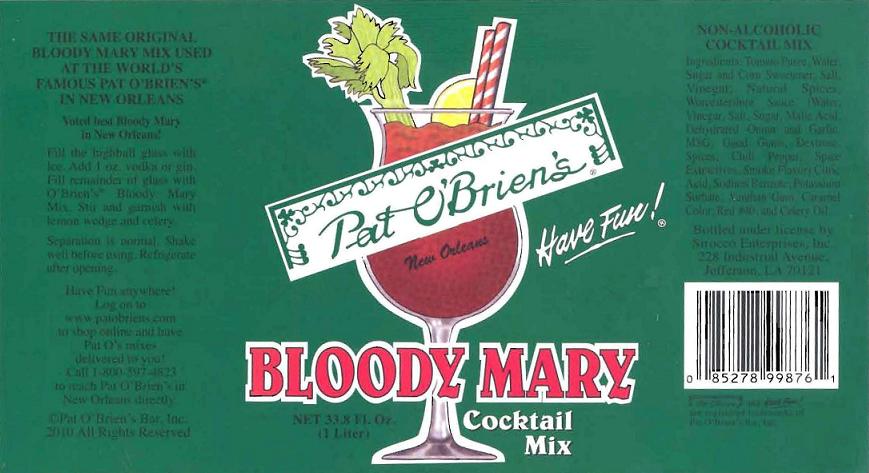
RECALLED - Bloody Mary Cocktail Mix

December 23, 2011 - Sirocco Enterprises, Inc. Issues Allergy Alert On Undeclared Soy And Wheat In Pat O’Brien’s Bloody Mary Cocktail Mix.